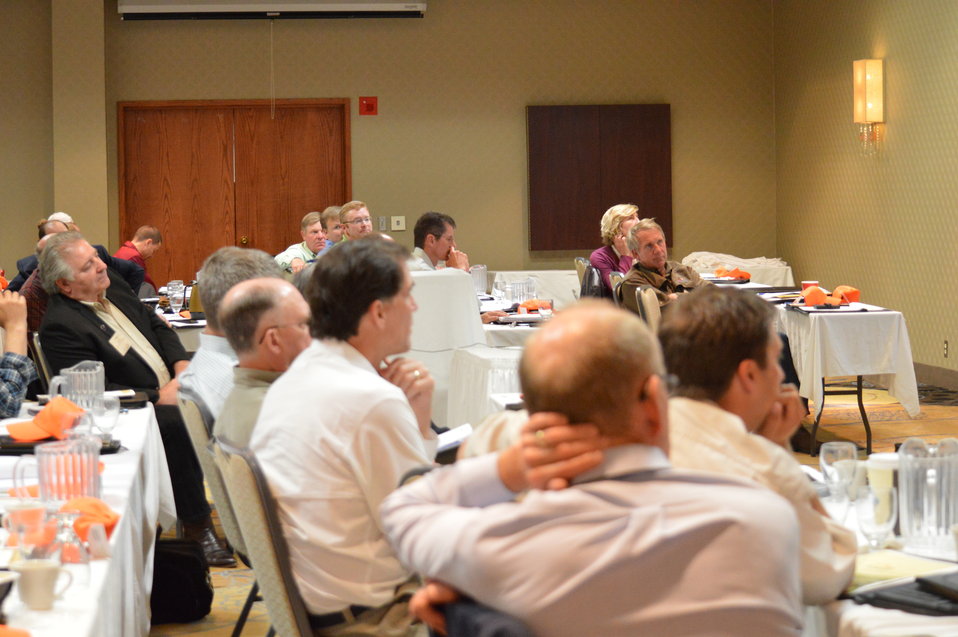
Dan Ashe and attendees at the Prairie Summit

Through the efforts of Ducks Unlimited and its partners, a Prairie Summit meeting was held in June 2013 in Bismarck, North Dakota, bringing key stakeholders to the table to identify and begin to address the immediate needs of the overall effort to conserve wetlands and grasslands, as well as bring media attention to the issues at hand and the urgency of the situation.